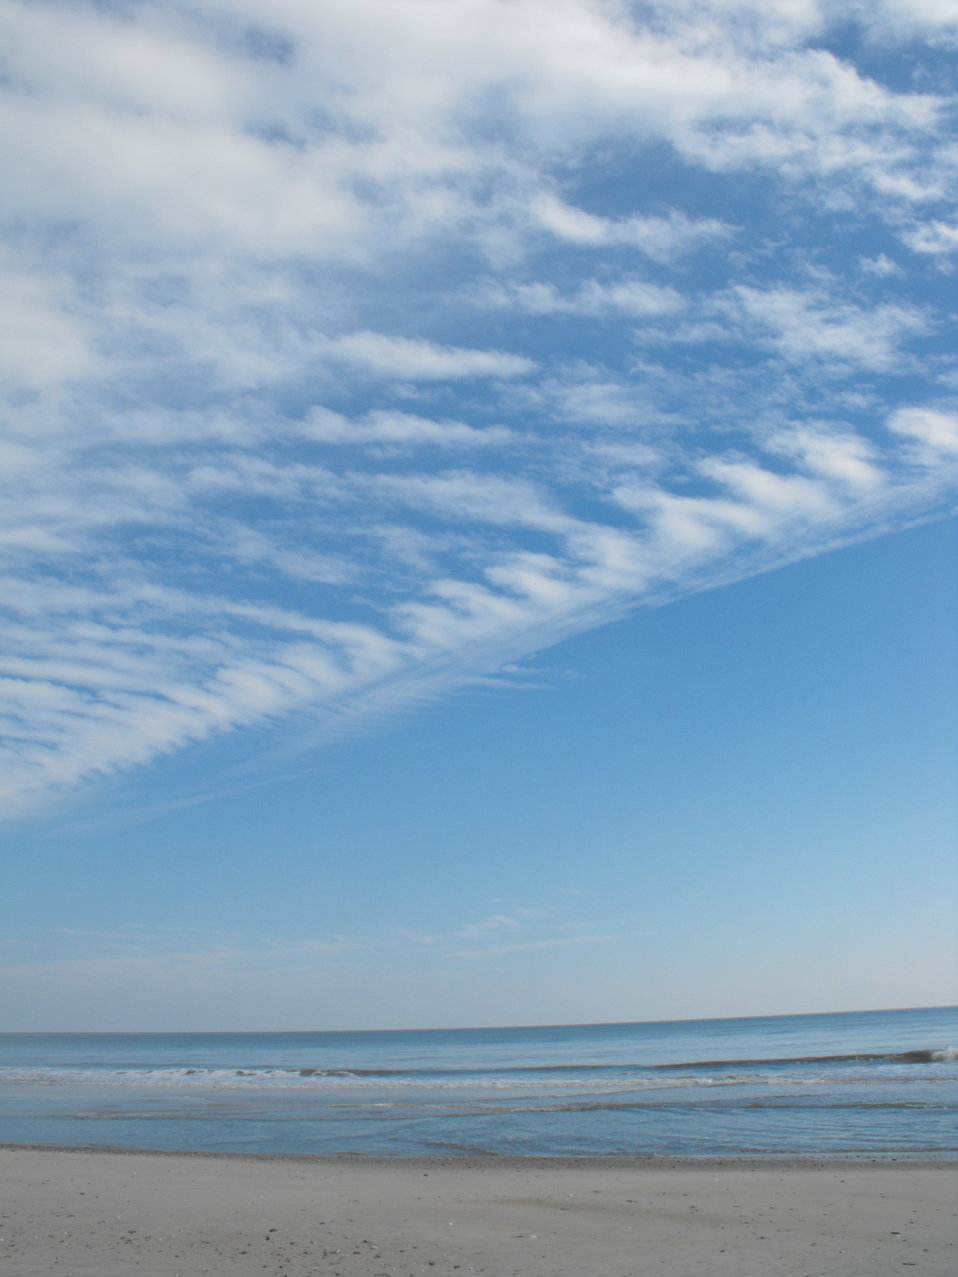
Wild Beach at Chincoteague National Wildlife Refuge / Assateague Island National Seashore.